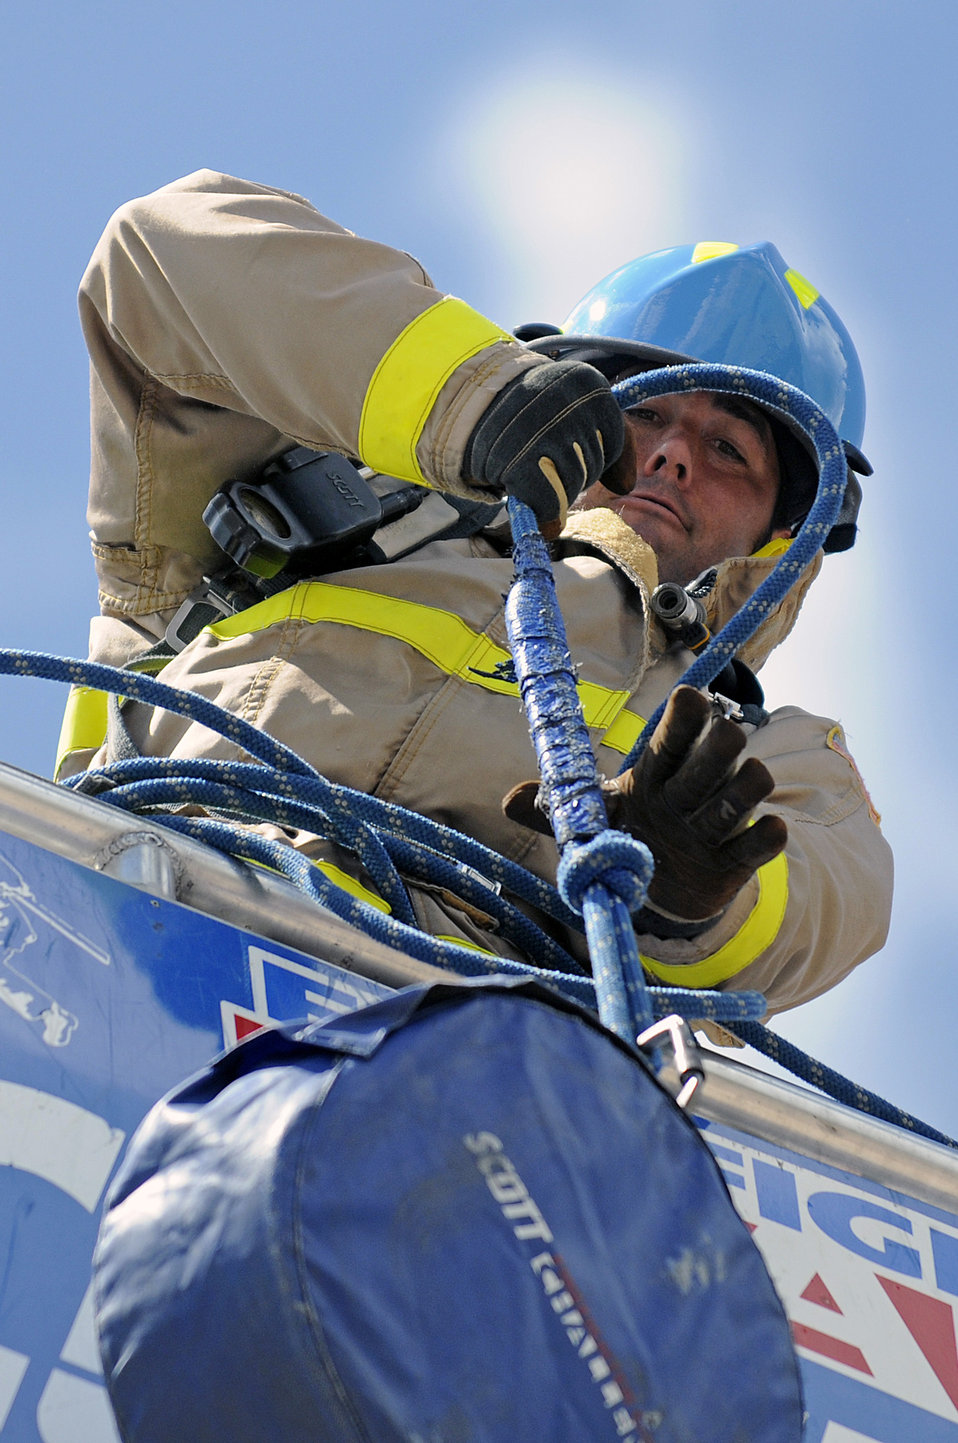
Firefighters Combat Challenge

Air Force Academy relay member firefighter Steve Holland finishes hoisting a 45-pound hose up a five story tower during the two-day regional Firefighter Combat Challenge competition held June 24/25 at the Air Force Academy's Falcon Stadium.